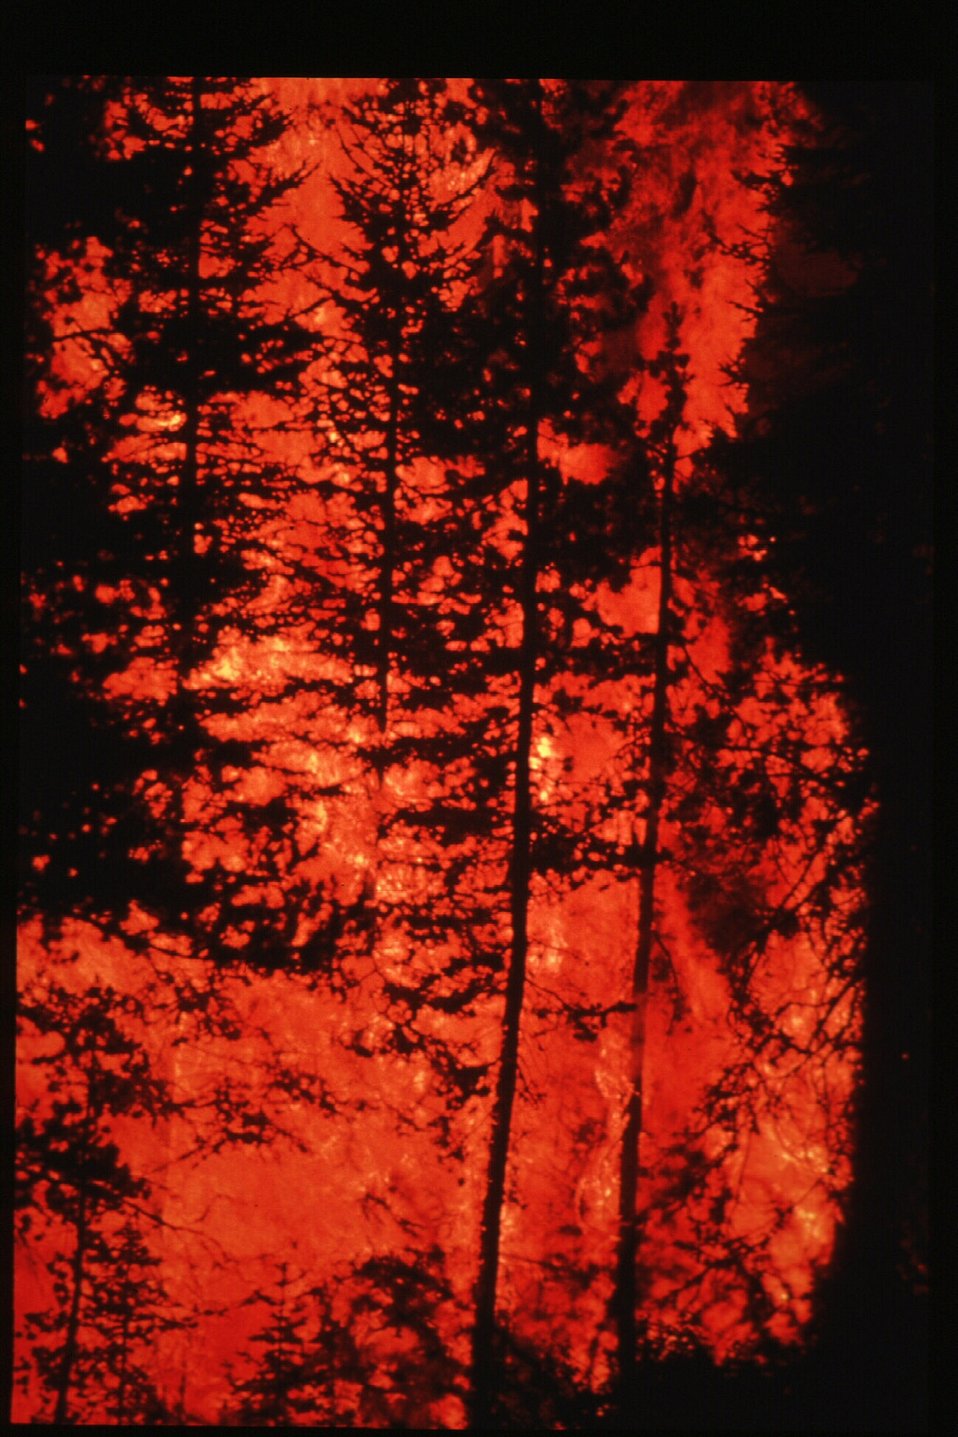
Boise Foothills Fire Danskin Mountains and South Fork of Boise River Four River Field Office LSRD Lower Snake River District